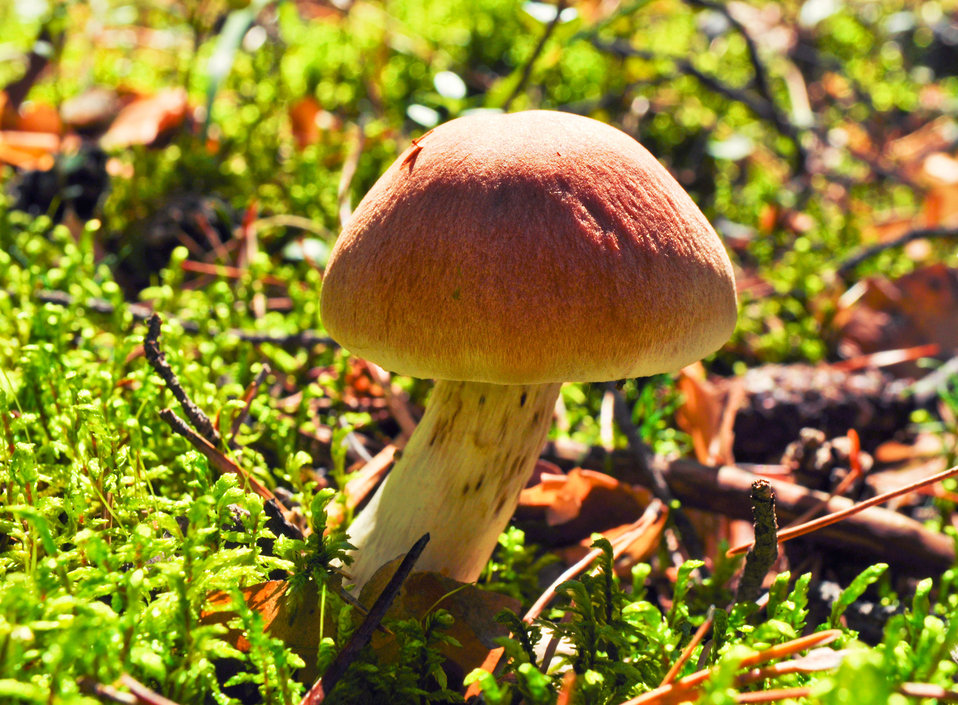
Beautiful mushroom

Large mushroom on the moss.